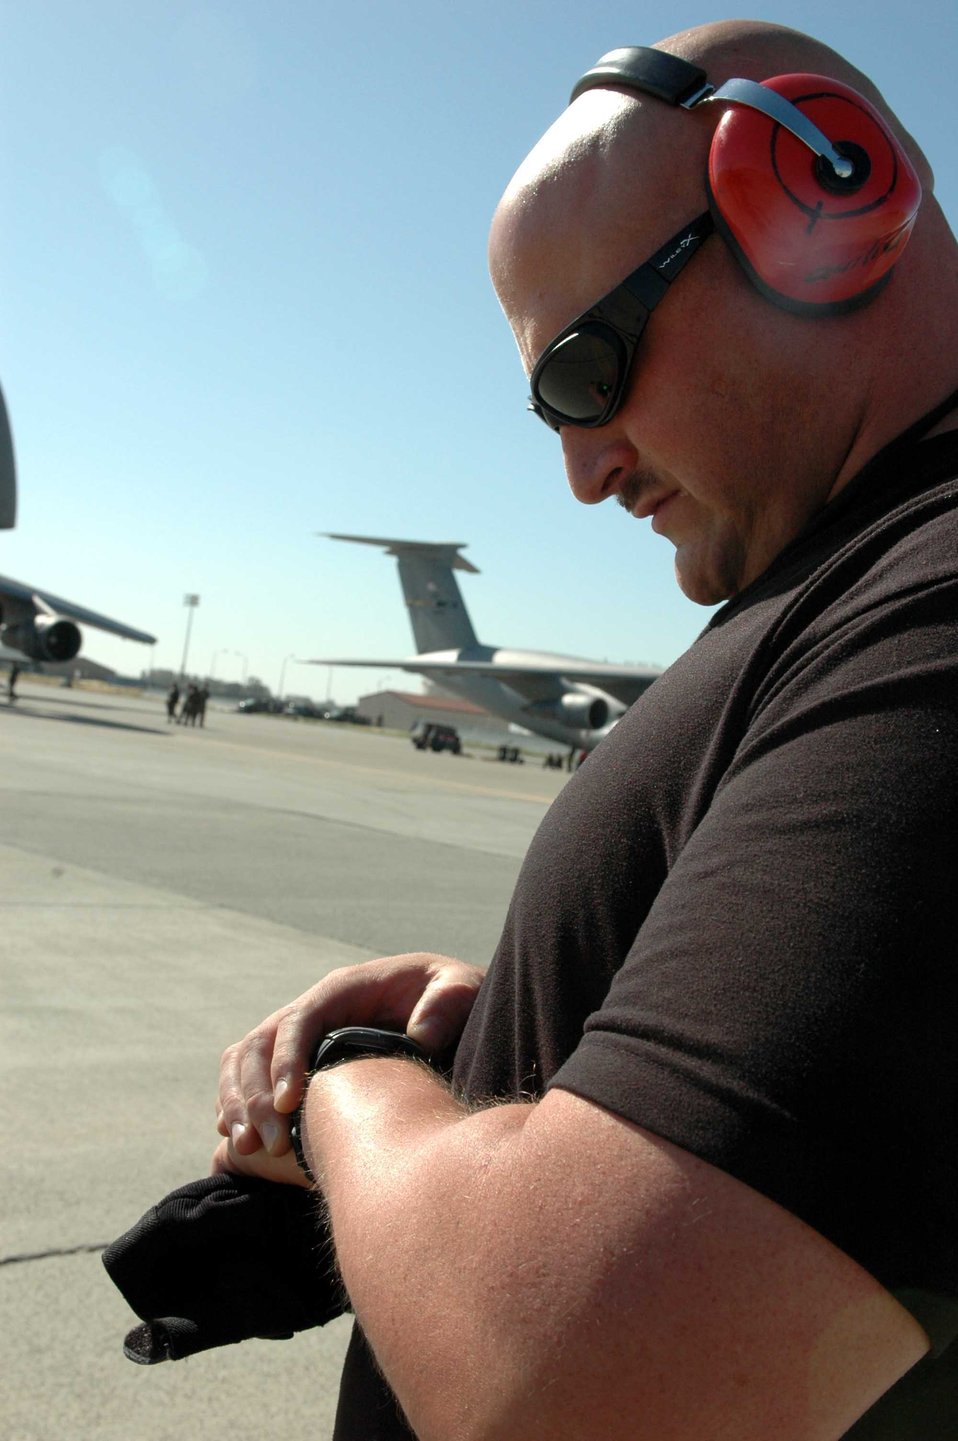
Loading up for Rodeo

Tech. Sgt. Ken Quilici monitors the time during C-5 Galaxy engine running on (and) offload team practice June 11 at Travis Air Force Base, Calif. The team must load and unload a C-5 and a C-17 Globemaster III in the fastest time possible with no safety violations. The practice is part of the 60th Aerial Port Squadron's preparations for the 2007 Air Mobility Command's Expeditionary Rodeo to be held in July at McChord AFB, Wash.